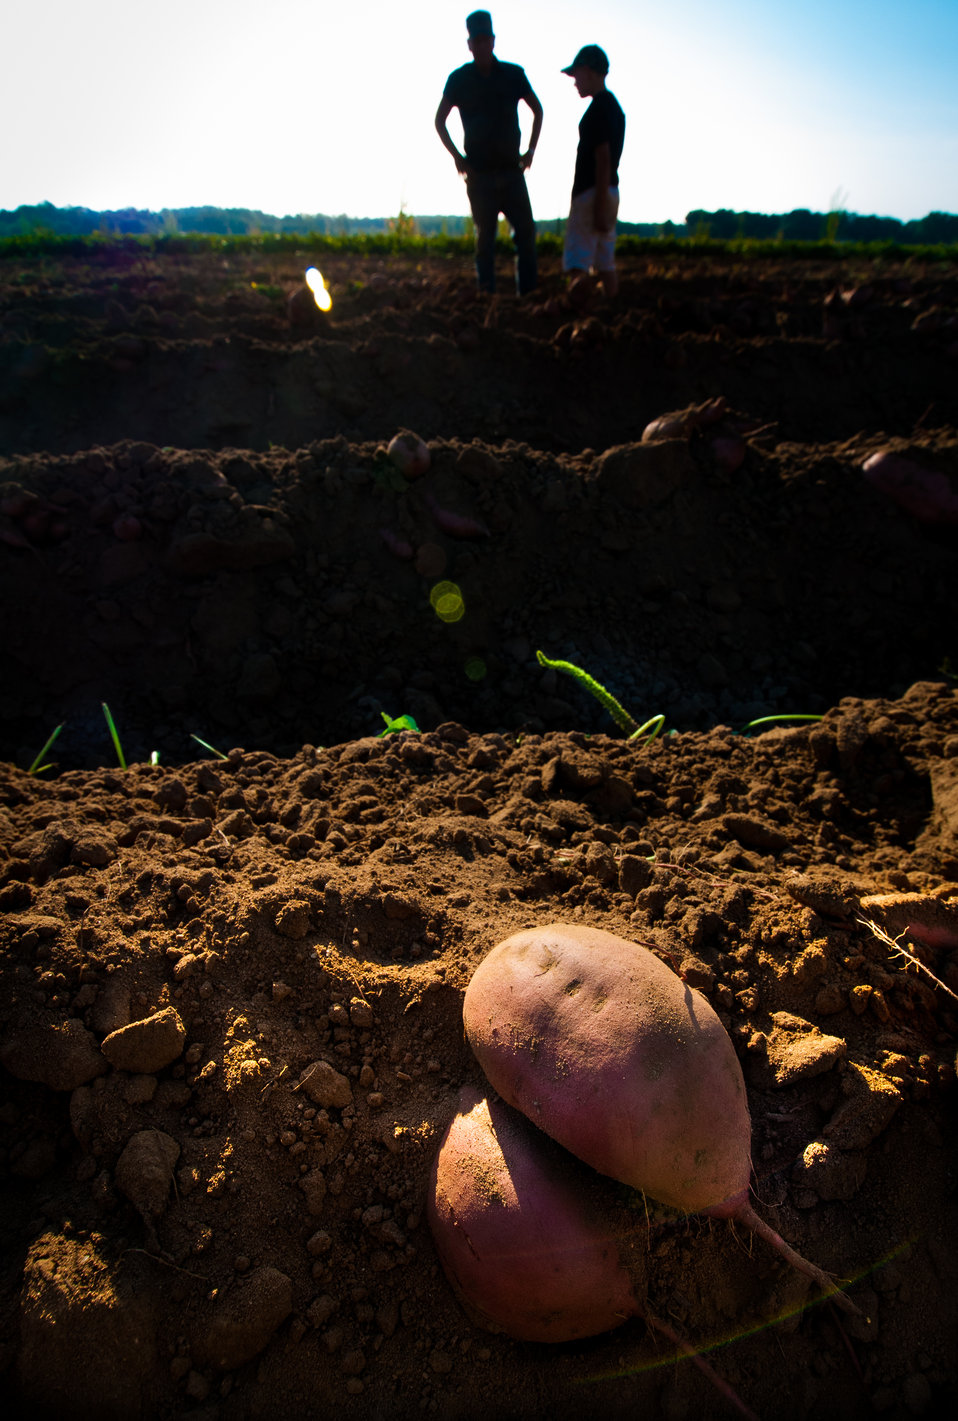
Large sweet potatoes are harvested at Kirby Farms in Mechanicsville, VA on Sep. 20, 2013. Kirby Farms is a third-generation family farm that covers 500 acres, and generates produce and grains on a year-around operation. Please see the photoset description for more information about this farm operation.